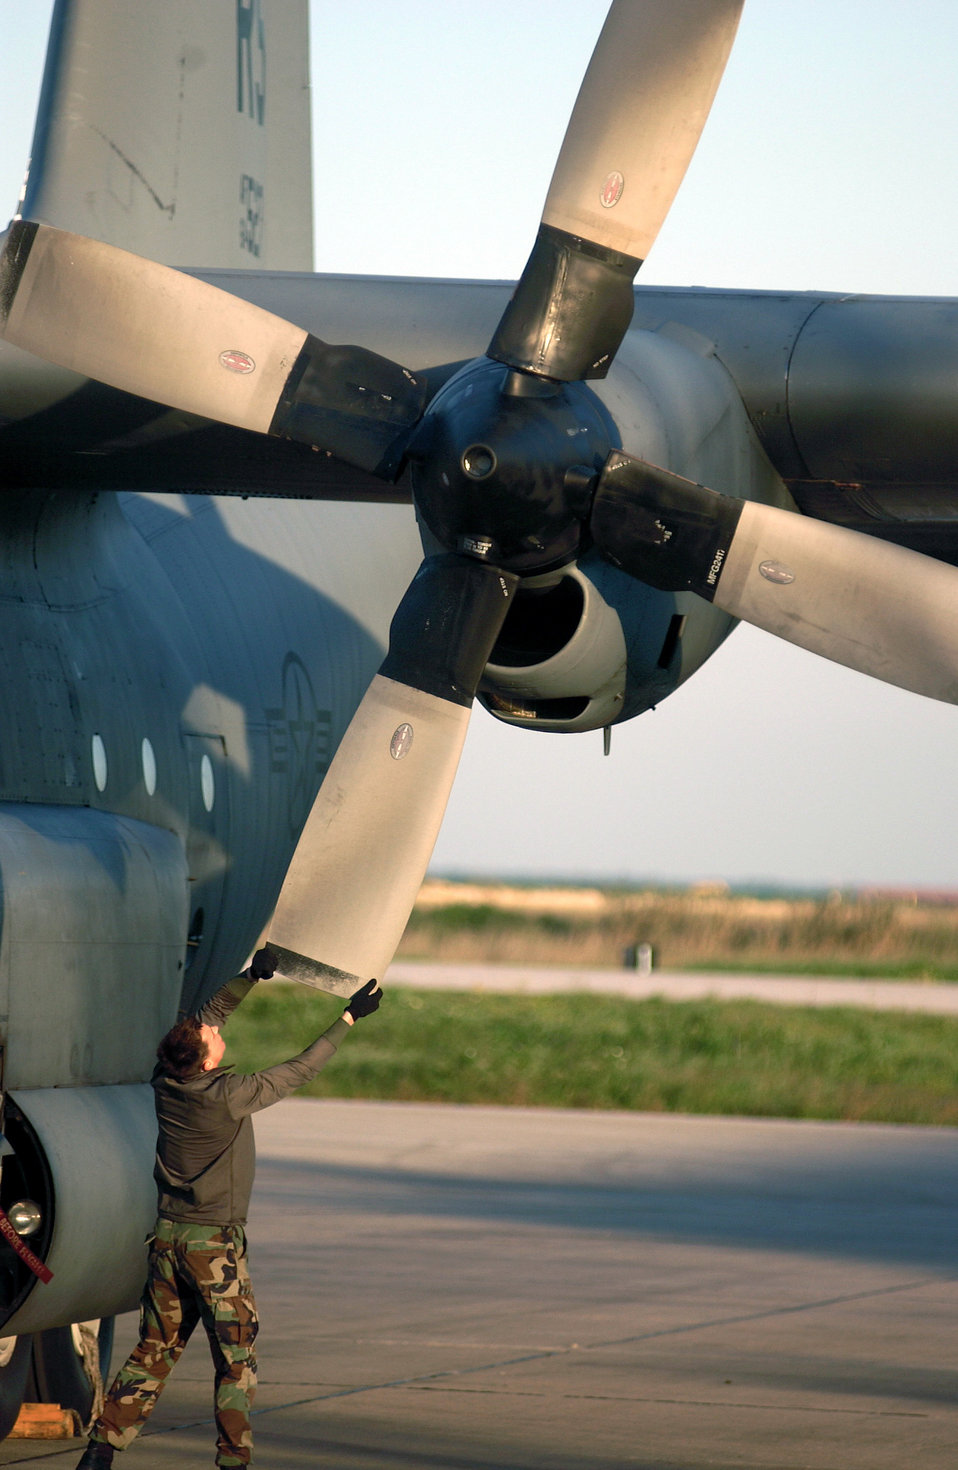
And the winner is...

VANDENBERG AIR FORCE BASE, Calif. -- Senior Airman Mitchell Blake competes during the missile maintenance team exercise portion of Guardian Challenge here May 4. Airman Blake is assigned to the 91st Space Wing at Minot Air Force Base, N.D. The Minot team took home the Blanchard Trophy for best intercontinental ballistic missile space wing.